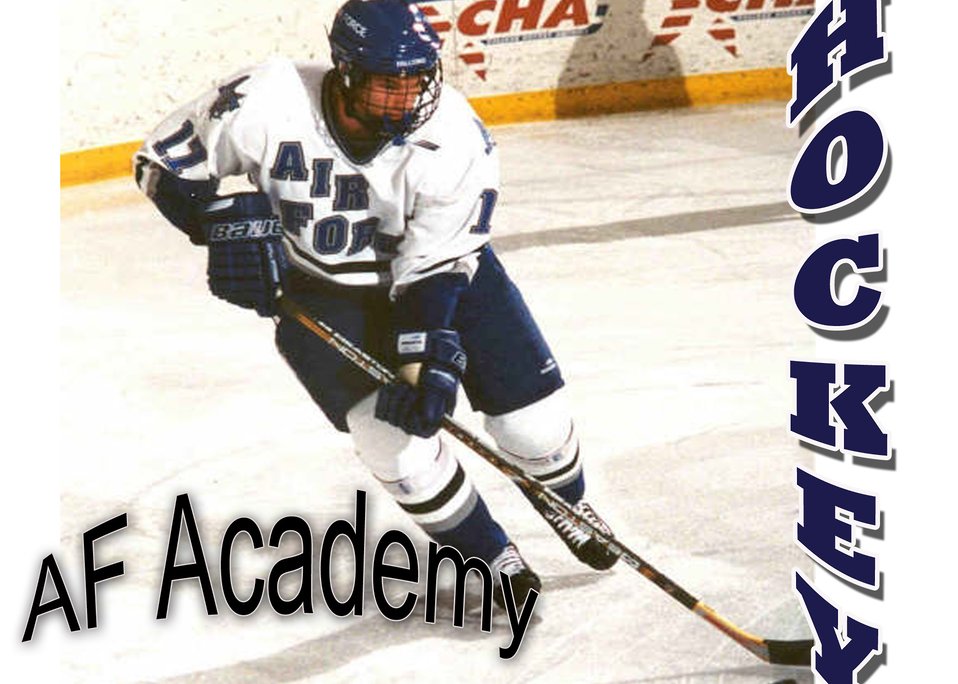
Academy Hockey

Air Force Academy Hockey